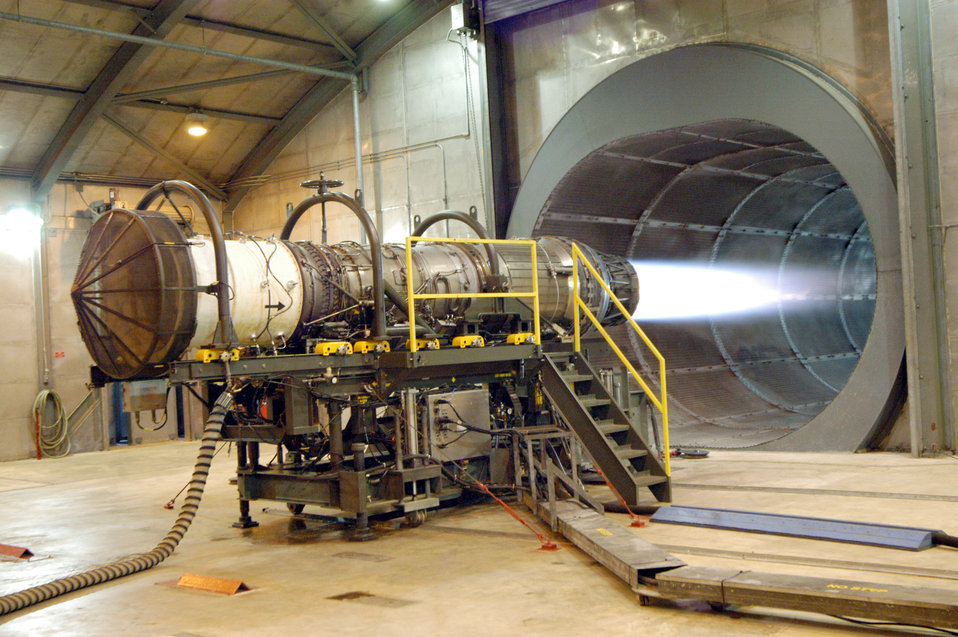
There's a kind of hush…

ROBINS AIR FORCE BASE, Ga. -- An F-15 Eagle engine is tested in the